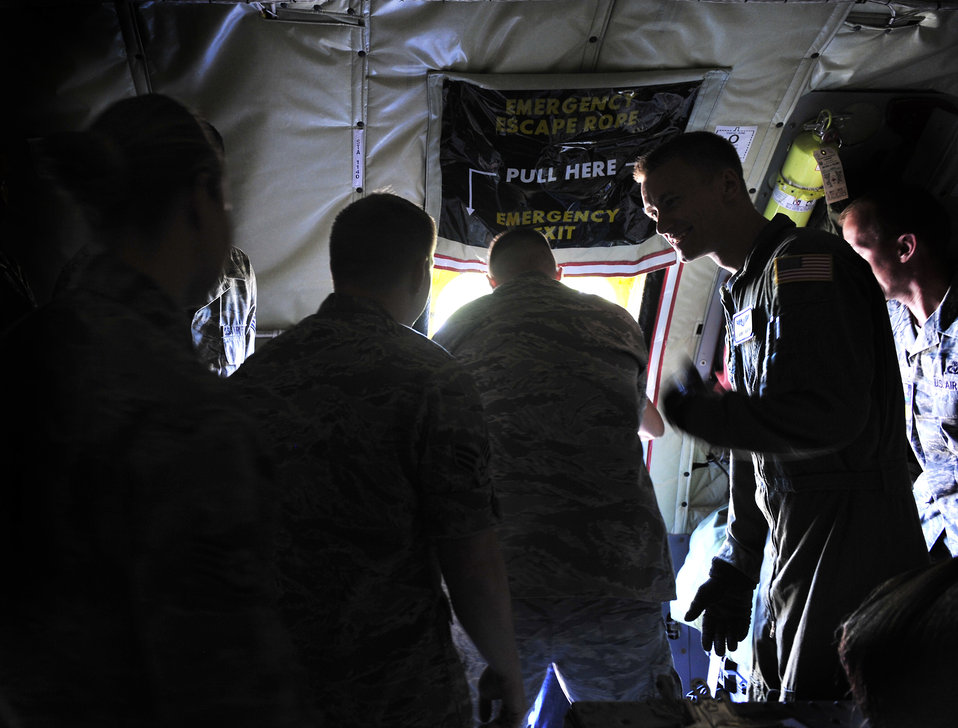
Egress exercise

Passengers aboard a KC-135 Stratotanker prepare to evacuate the plane June 28, 2011, during an egress scenario at Scott Air Force Base, Ill.